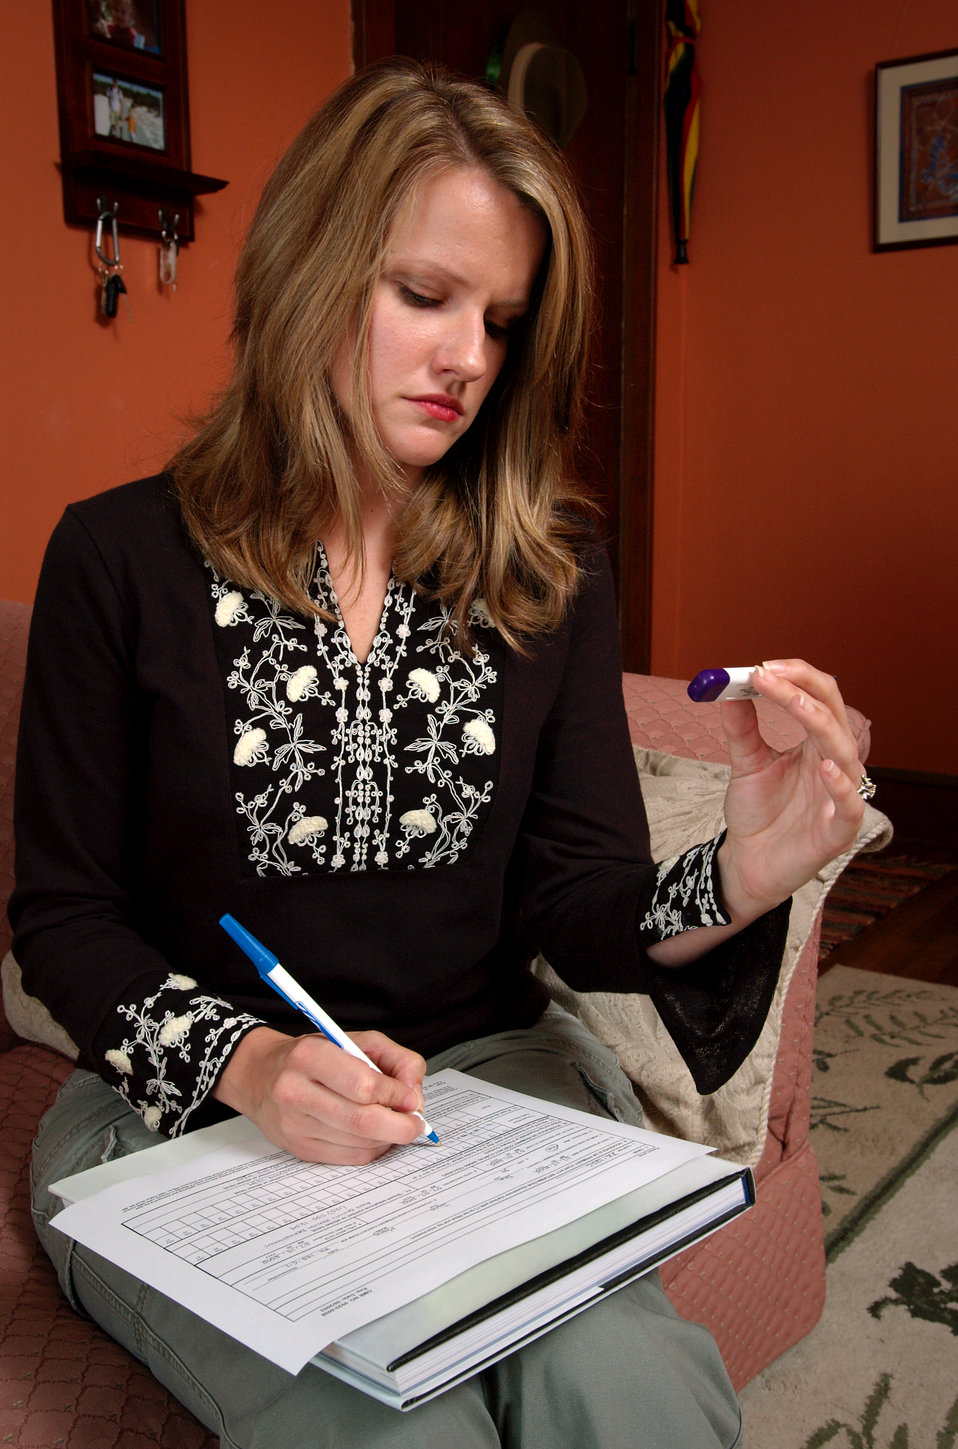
Woman reading thermometer

This photograph depicted a woman who was reading a modern, battery-powered oral thermometer, used in order to measure her body temperature. She was also recording the reading, by writing down the value on a health survey form. In order to return an accurate reading, this particular type of thermometer needed to be placed beneath the user's tongue, for a set amount of time, beeping when the ambient, sublingual temperature was reached.